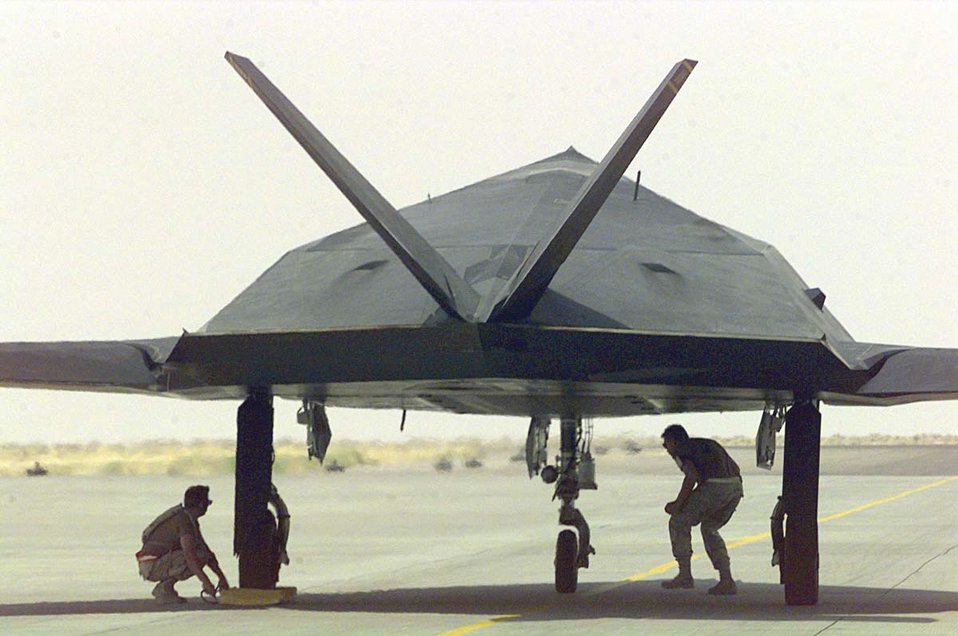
Nighthawk

OPERATION SOUTHERN WATCH -- F-117 Nighthawks assigned to the 8th Fighter Squadron, 49th Fighter Wing, Holloman Air Force Base, N.M., receive one last check before departing Ahmed Al Jaber Air Base, Kuwait, June 6 after the unit received redeployment orders. The 8th FS was deployed here in support of Southern Watch.